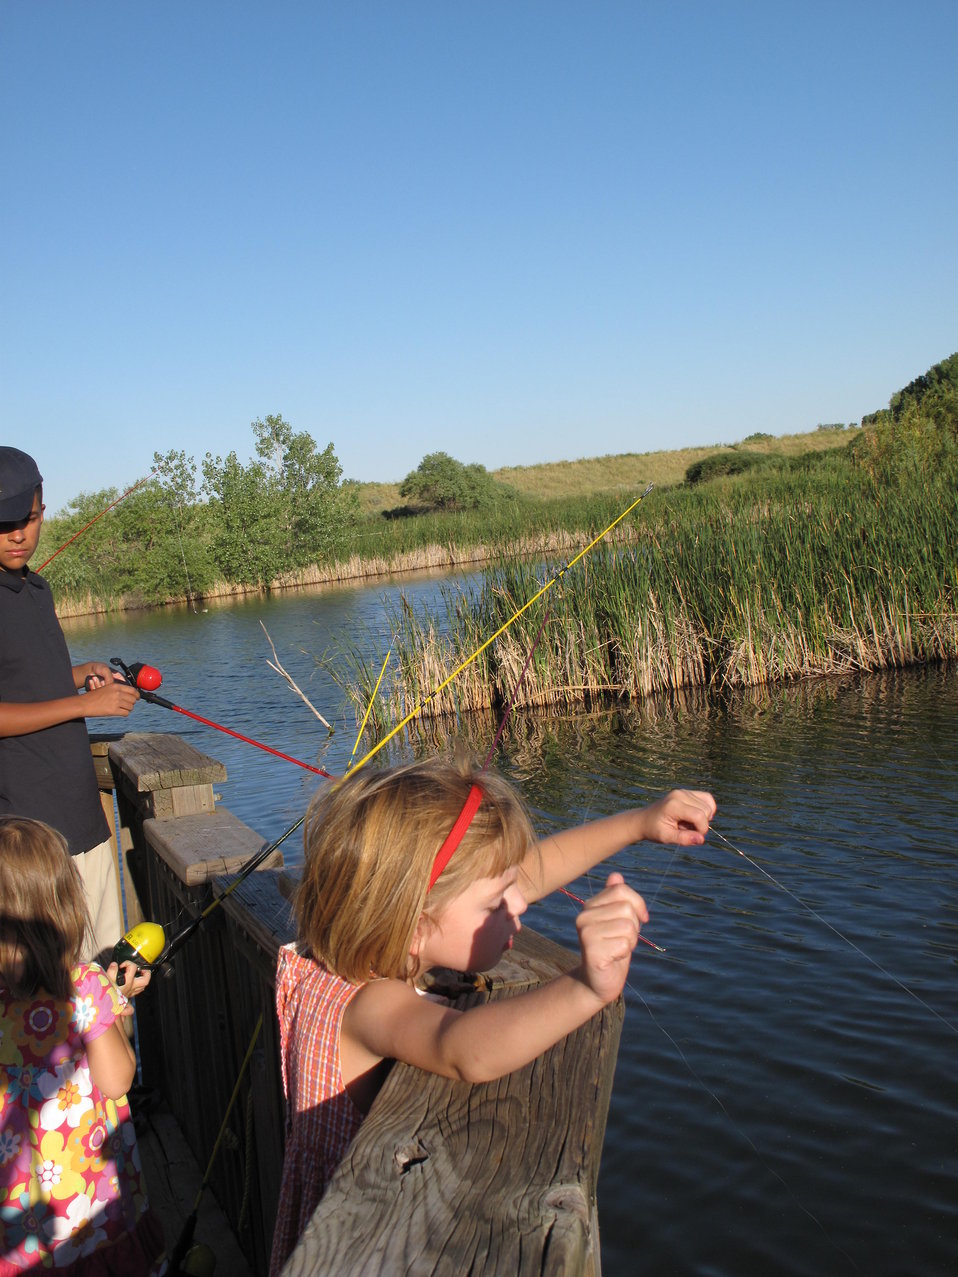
Fishing at the Rocky Mountain Arsenal